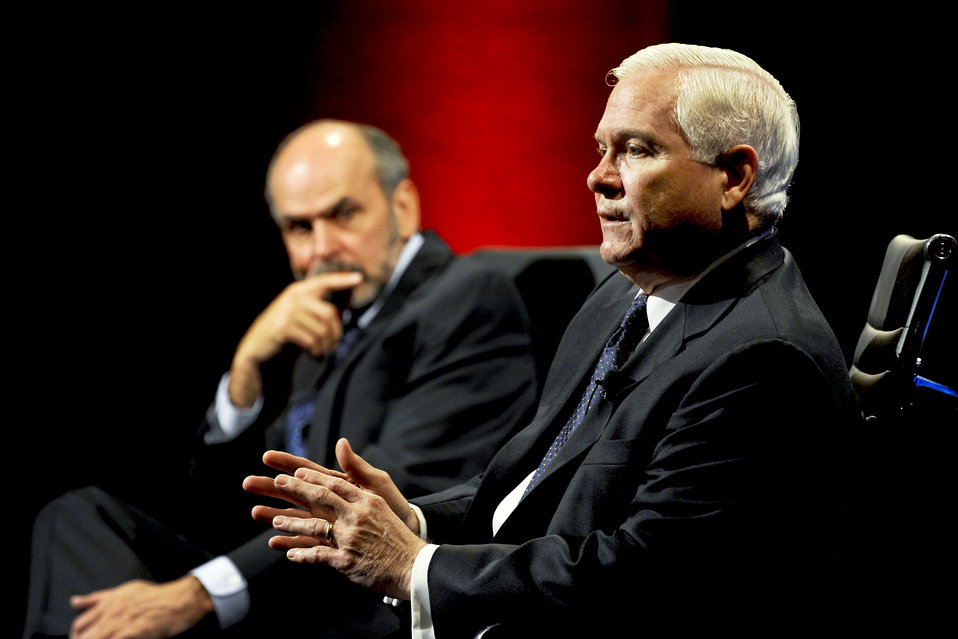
Gates cyber threats

Defense Secretary Robert M. Gates (right) responds to a question during an interview with Gerald F. Seib, the Wall Street Journal's executive Washington editor, during the newspaper's CEO Council event Nov. 16, 2010, in Washington, D.C. The interview focused on upcoming budget cuts within the department. Seib also is the Wall Street Journal's assistant managing editor.